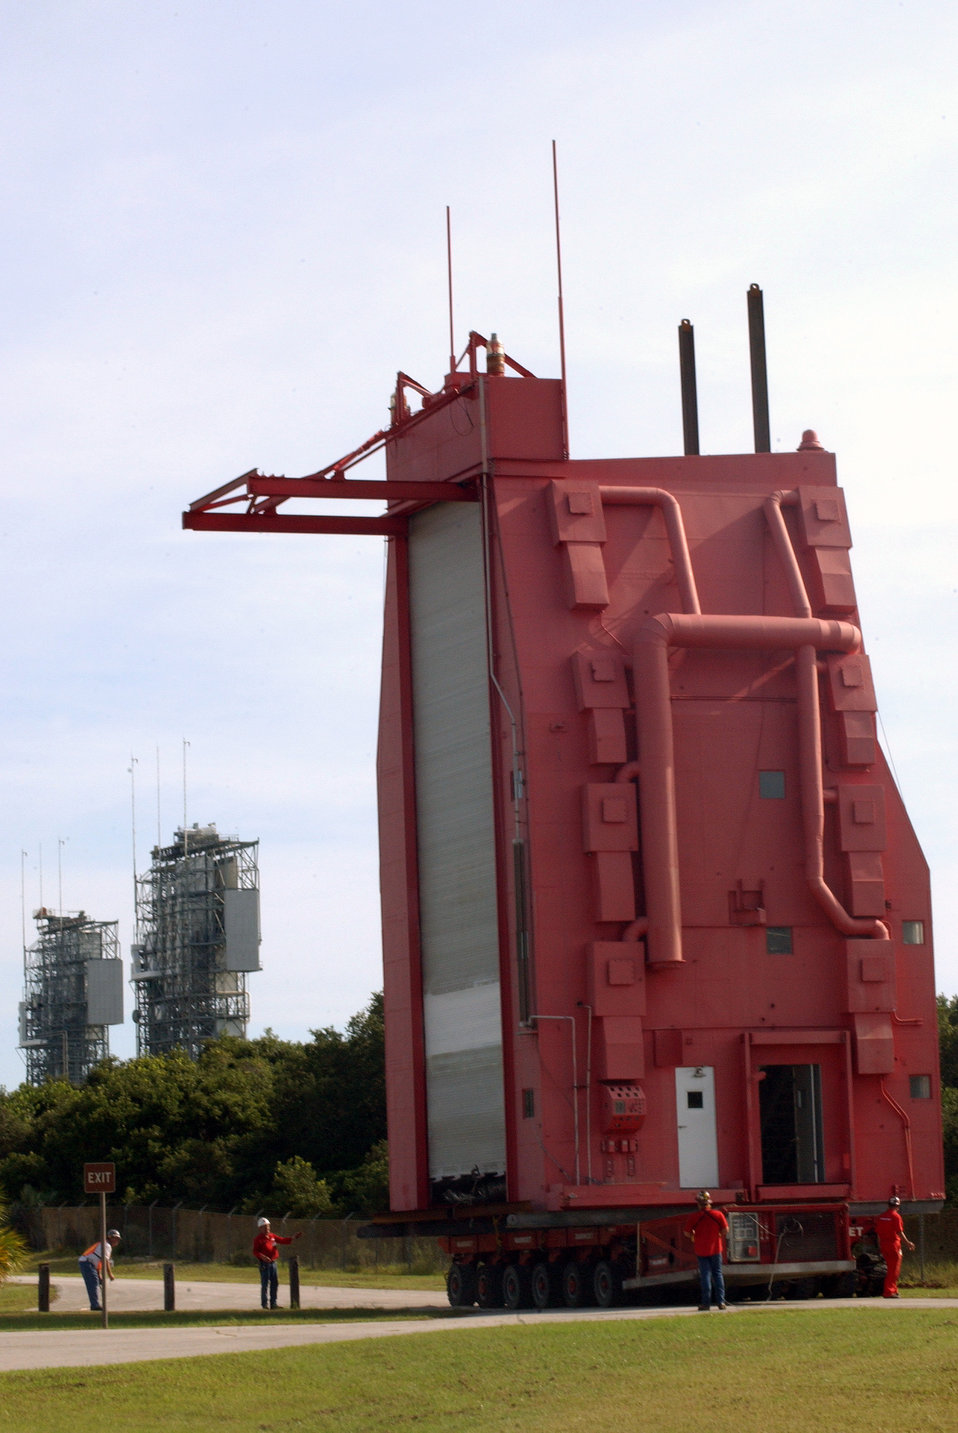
Complex 19 White Room

CAPE CANAVERAL AIR FORCE STATION, Fla. (AFPN) -- The historic Complex 19 White Room here was relocated to its new home in the outdoor Rocket Garden at the nearby Air Force Space and Missile Museum. The structure was lifted by two 165-ton cranes and placed on two self-propelled low-profile crawlers, which moved the room 1,800 linear feet. The White Room, 56 feet tall and weighing 46 tons, was used by Gemini astronauts during missions in the mid-1960s.